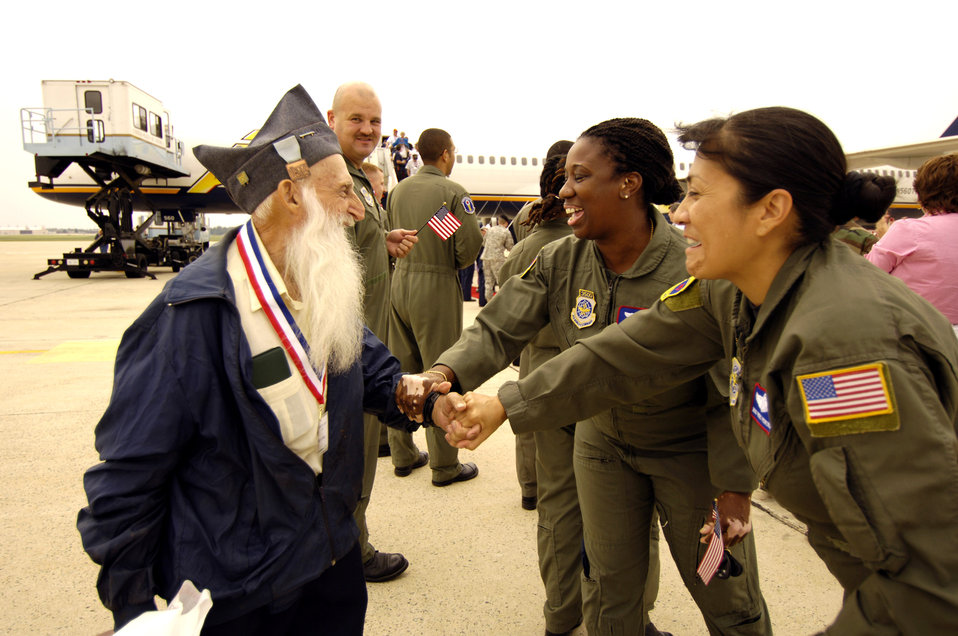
Hero Flight transports 122 WW II veterans in 2007

Airmen from the 89th Airlift Wing greet Harley Lorenz Sept. 14 at Andrews Air Force Base, Md., after a Hero Flight. Mr. Lorenz served as a private 1st class in the Army Air Corps in World War II. Hero Flight is an all-volunteer program that sets up trips to allow as many World War II veterans as possible to visit the National World War II Memorial.